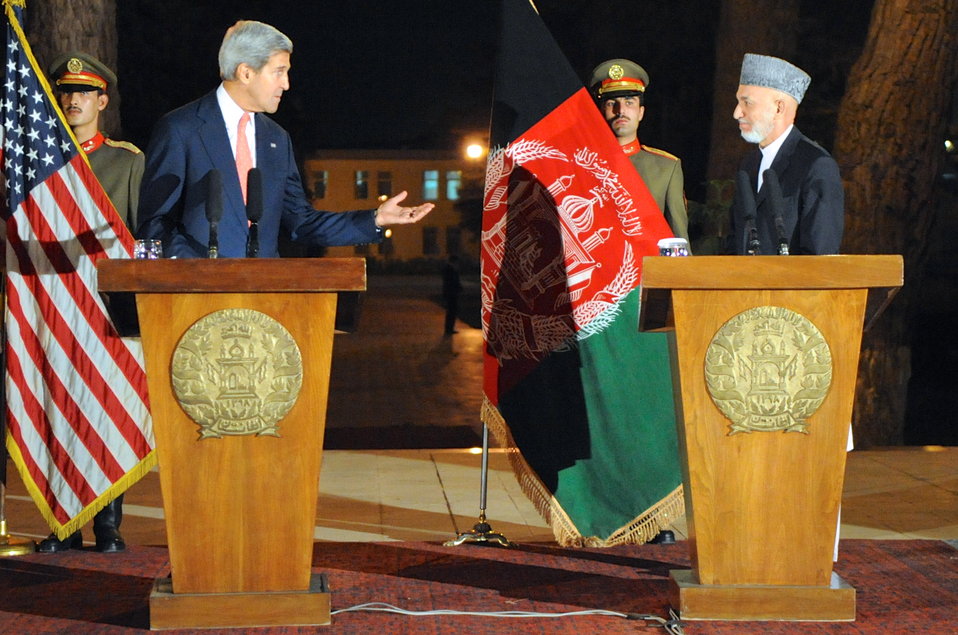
Secretary Kerry Discusses Bilateral Security Agreement With Afghanistan

U.S. Secretary of State John Kerry addresses President Hamid Karzai as he discusses a Bilateral Security Agreement with Afghanistan during an outdoor news conference in Kabul, Afghanistan, on October 12, 2013. You can view Secretary Kerry's remarks here: www.state.gov/secretary/remarks/2013/10/215358.htm.